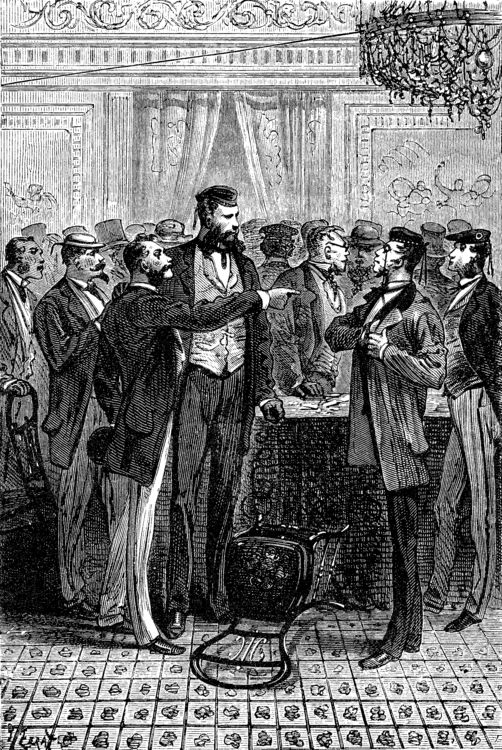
An illustration from Jules Verne's novel 'A Floating City' (1869) drawn by Jules Férat. Polski: Ilustracja powieści Juliusza Verne'a 'Pływające miasto' (1869) autorstwa Julesa Férata. Français : Jules Verne: 'Une Ville flottante' (1869), dessins par Jules Férat. Orginal text: Français : « Tenez-vous ce soufflet pour reçu ? »